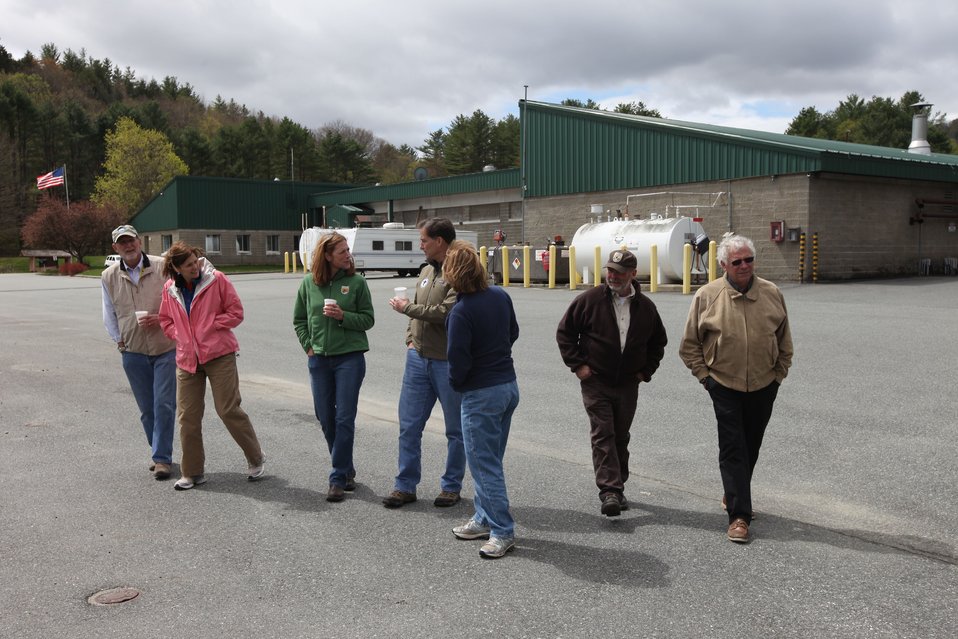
A Regional Directorate walking tour of the hatchery

U.S. Fish & Wildlife Service Director Dan Ashe visits the Northeast Region
for a tour of the White River National Fish Hatchery in Bethel, Vermont on
April 27, 2012. The hatchery was devastated by Tropical Storm Irene and
Dan Ashe had the chance to meet and thank the staff for their heroic work.
Director Ashe also visited restoration/flood response/fish passage project
sites in Rochester, Vermont and met with local officials and staff from the
White River Partnership.